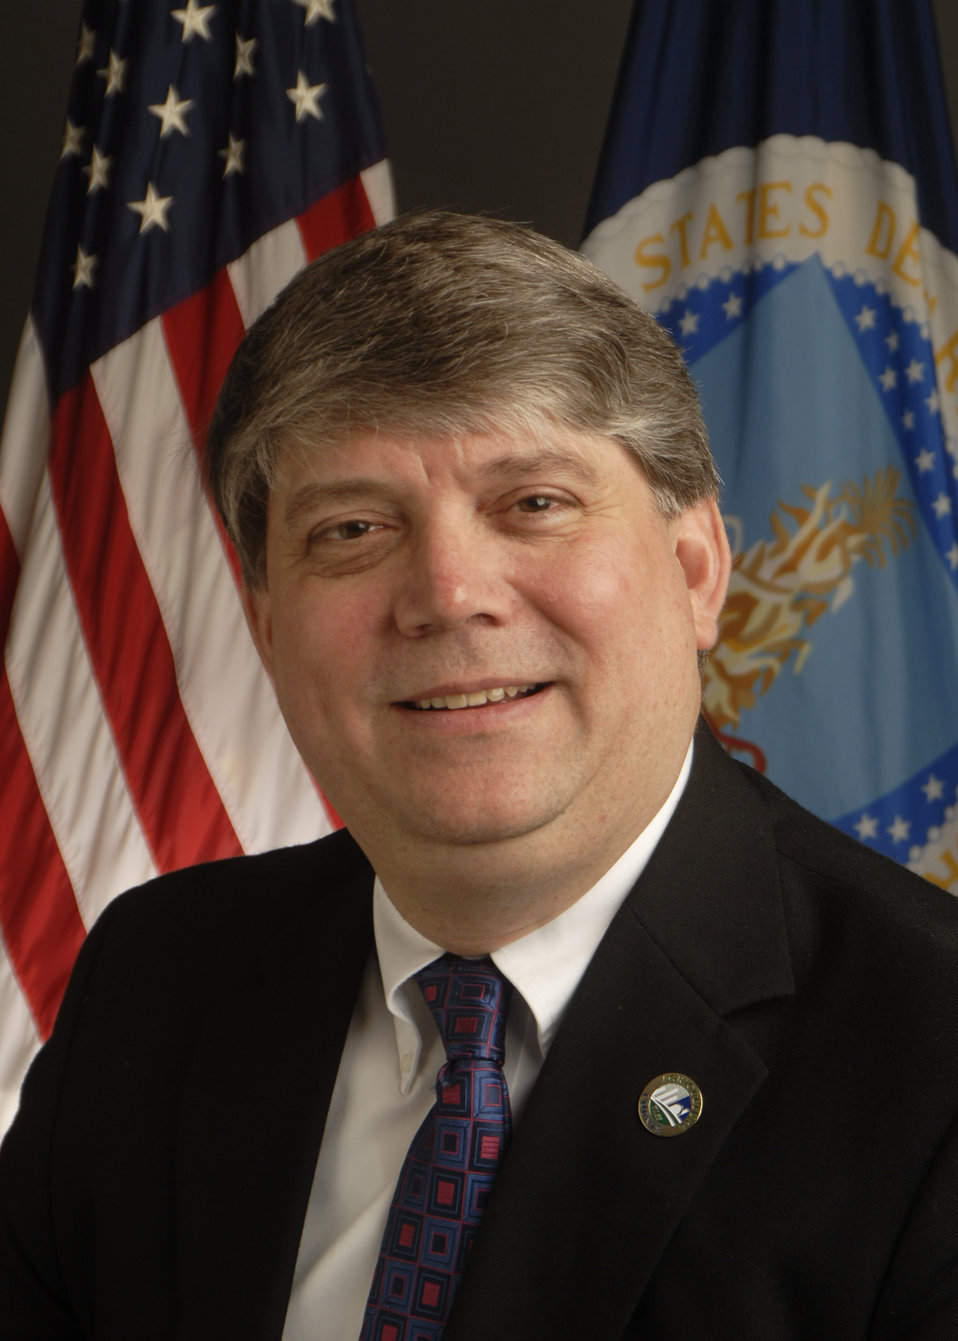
110217 NASS KJH 0282 Director, Statistics Division, National Agricultural Statistics Service Joseph J. Prusacki

Portrait of Joseph J. Prusacki, Director, Statistics Division, National Agricultural Statistics Service.